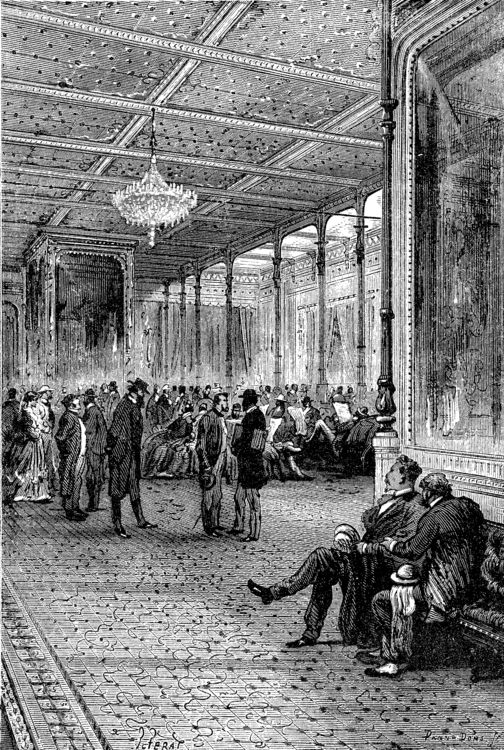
An illustration from Jules Verne's novel 'A Floating City' (1869) drawn by Jules Férat. Polski: Ilustracja powieści Juliusza Verne'a 'Pływające miasto' (1869) autorstwa Julesa Férata. Français : Jules Verne: 'Une Ville flottante' (1869), dessins par Jules Férat. Orginal text: Français : « Ceux-là, me dit-il, sont des gens du Far-West. »